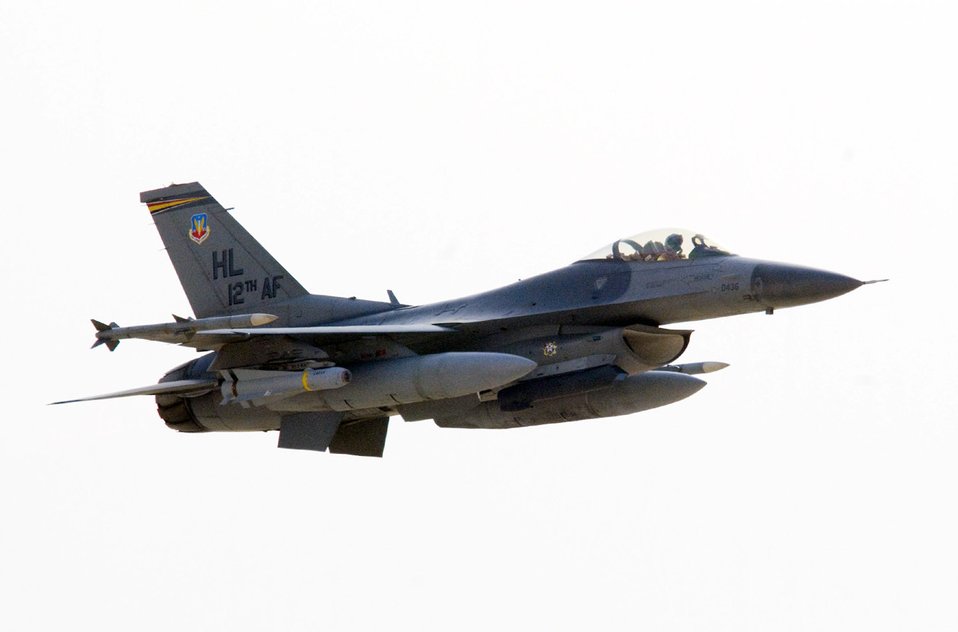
Operation Iraqi Freedom

An F-16 Fighting Falcon flies over Iraq in support of Operation Iraqi Freedom. F-16s destroyed a weapons cache in Baghdad and struck an IED emplacement team in Kirkuk Dec. 9. An F-16 also performed a show of force in Al kut.